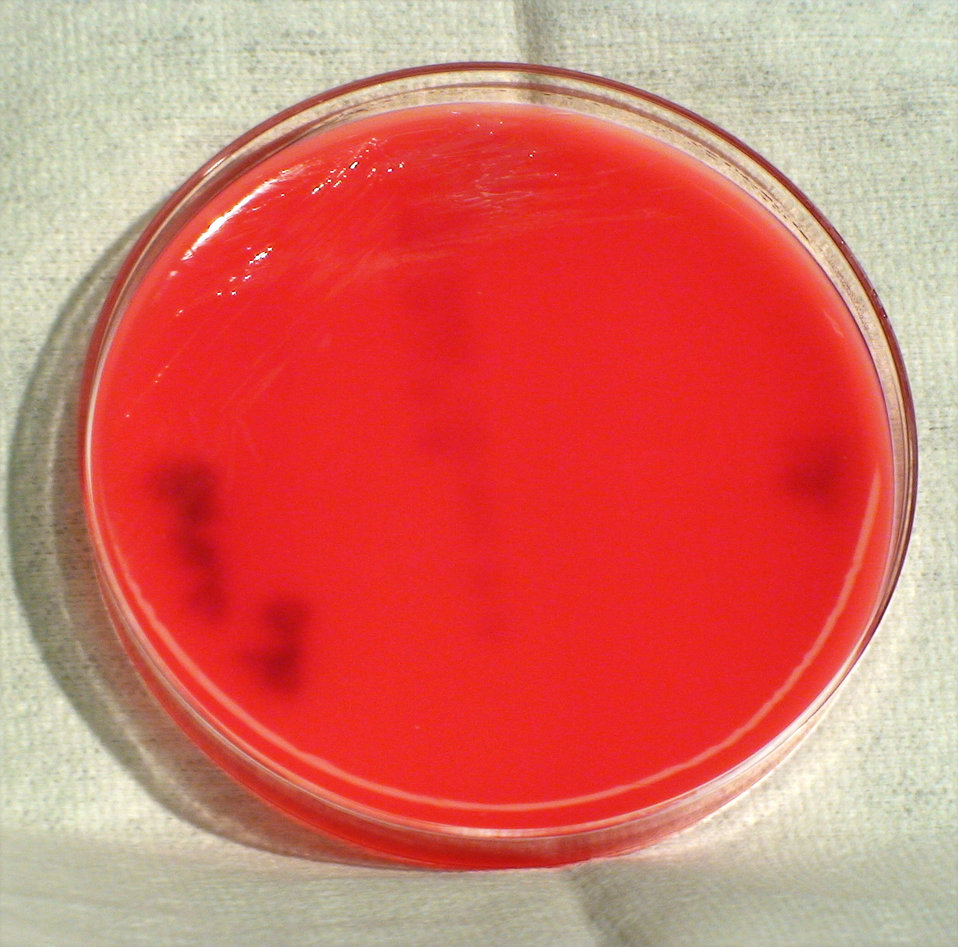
This photograph depicts light colonial growth displayed by Gram-negative Brucella abortus bacteria, which was grown on a medium of sheep's blood agar (SBA), for a 24 hour time period, at a temperature of 37�C. See PHIL 12372, for a closer view of these bacterial colonies. Members of this genus, including B. abortus, cause a disease known as brucellosis.